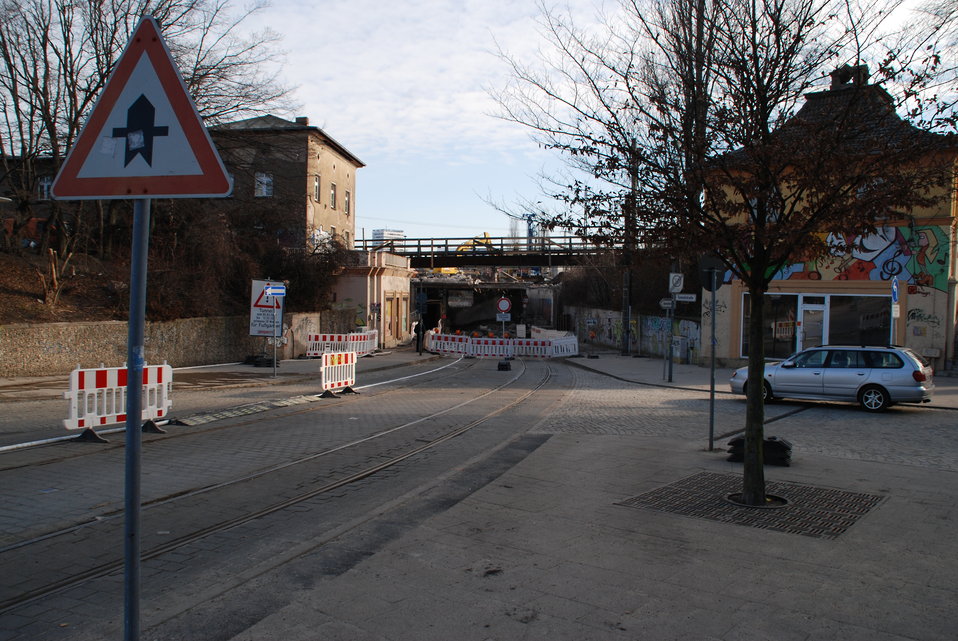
Abriss Bahnhofstunnel Frankfurt (Oder)